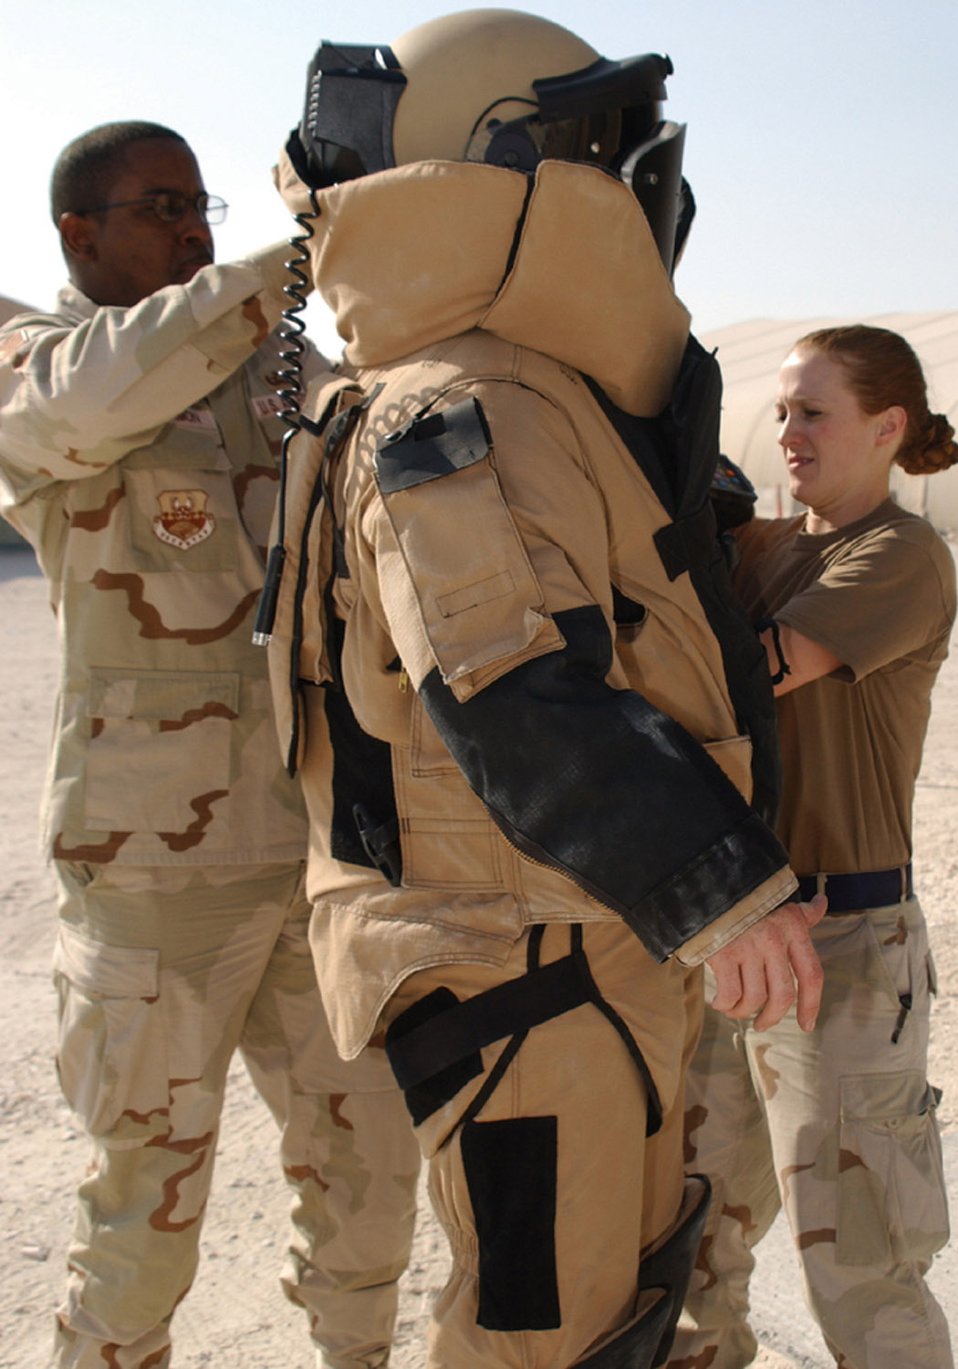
Detection, deterrence

SOUTHWEST ASIA (AFPN) -- Tech. Sgt. Anthony Blackmon and Staff Sgt. Lindsey Leitz help Airman 1st Class Mark Kinney suit up for an explosive ordnance disposal training mission. The Airmen are with the 379th Expeditionary Civil Engineering Squadron explosive ordnance disposal unit at this base.